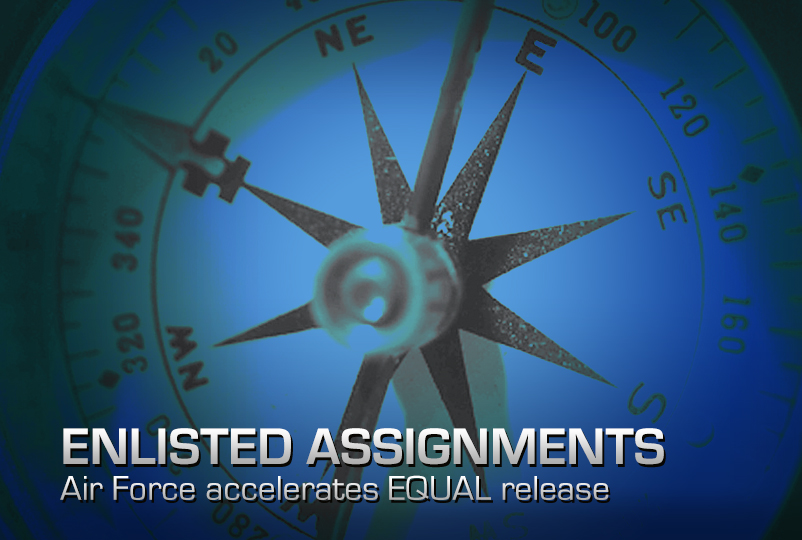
EQUAL released